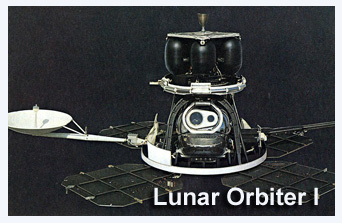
Lunar Orbiter 1

The Lunar Orbiter 1 photographed potential landing sites for the Apollo missions and the site where Surveyor 1 had landed three months earlier. It also provided the first clear images of the lunar far side.